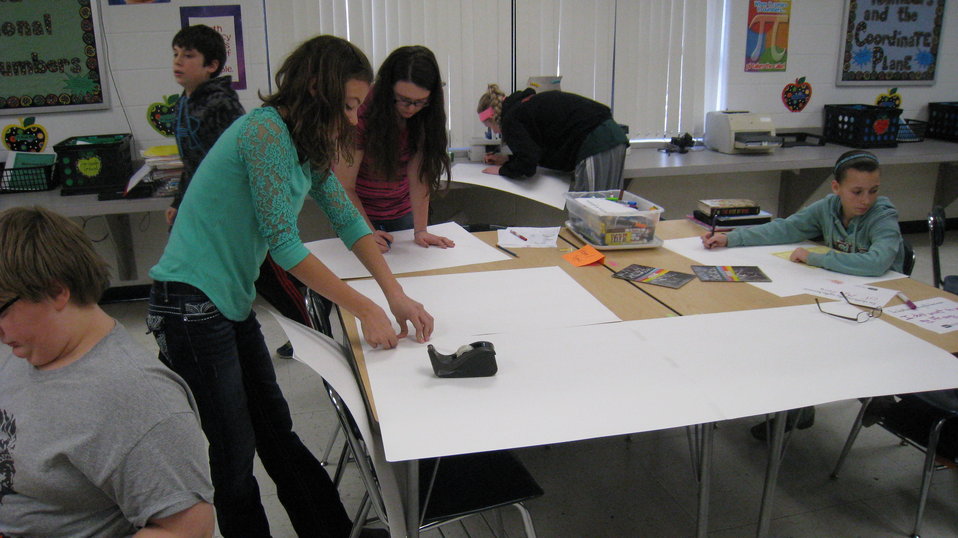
Project NDFW: 2014

Teenagers from the Van Buren County SAFE Coalition's, Youth Leadership Council (YLC) in Keosauqua, Iowa participate in various events during National Drug Facts Week, 2014.